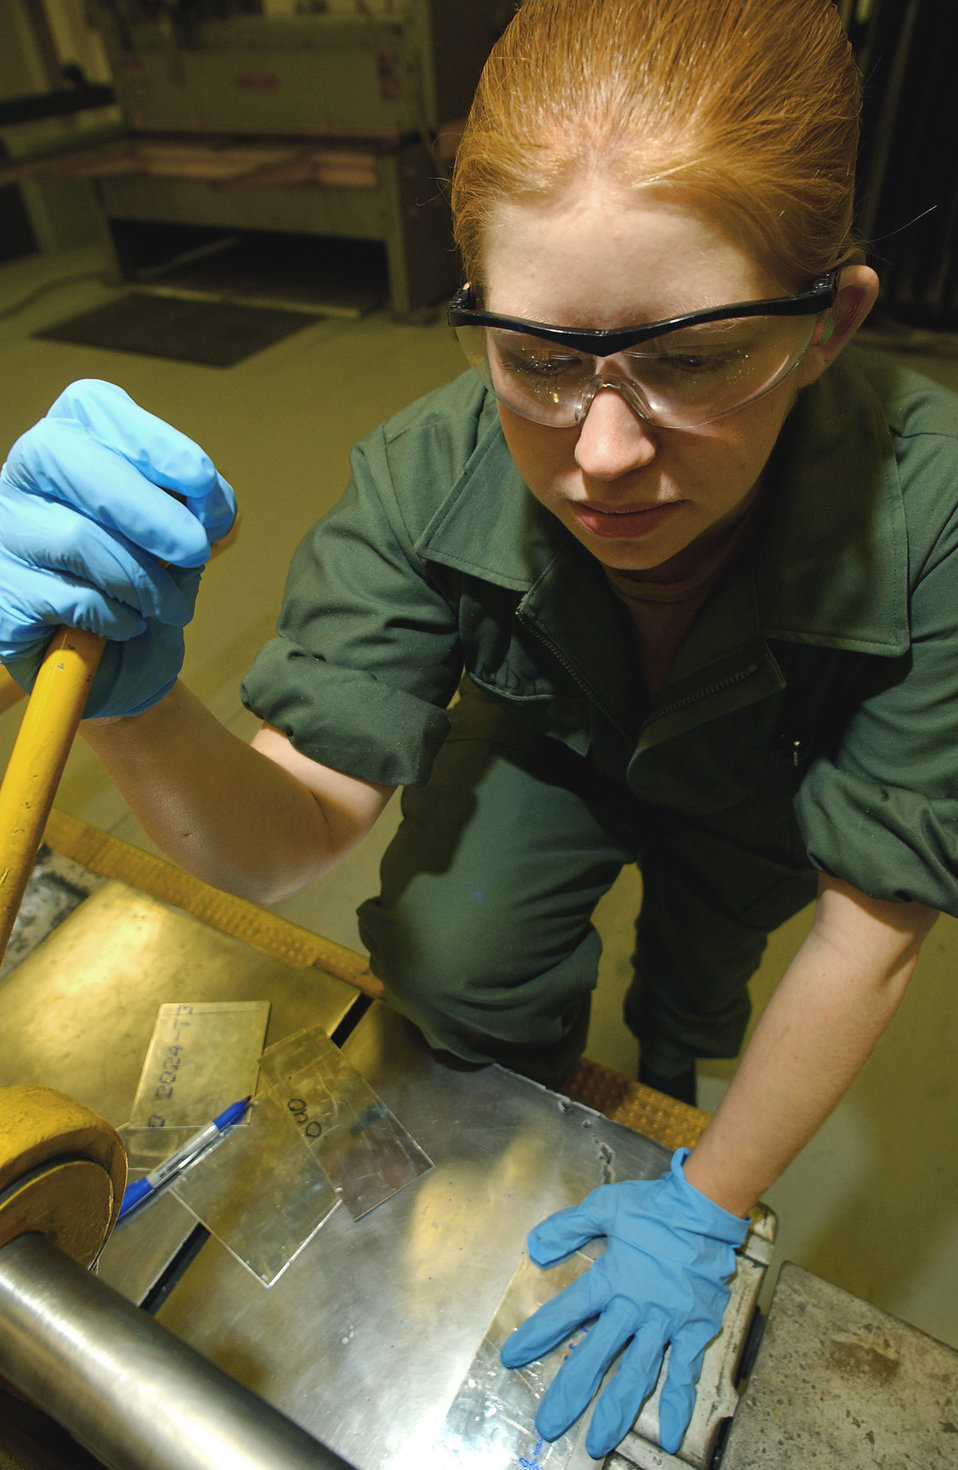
Slice and dice

ROYAL AIR FORCE MILDENHALL, England -- Airman 1st Class Miranda Mikkelson slices sheets of aluminum on a square sheer April 15. This procedure is commonly used for patch repair on all base aircraft around Mildenhall.
Airman Mikkelson is an aircraft structural maintenance apprentice assigned to the 100th Maintenance Squadron here.